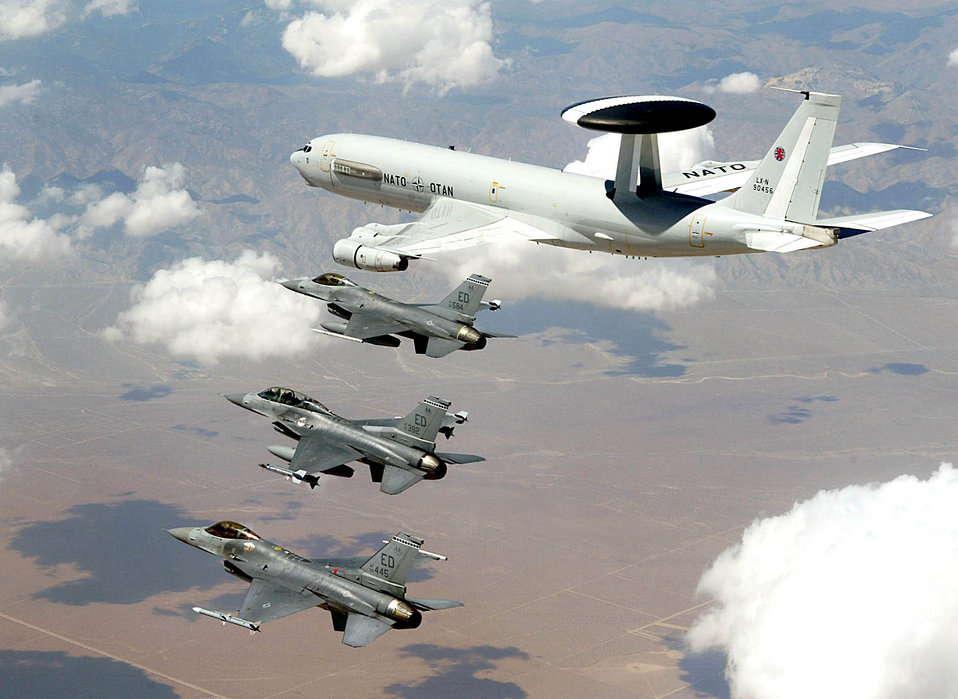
Falcons off my wing

EDWARDS AIR FORCE BASE, Calif. -- A NATO Airborne Warning and Control System aircraft flies with three F-16 Fighting Falcons during a recent test mission . The AWACS was here to conduct airborne interoperability testing on the Link-16, part of the F-16 Mid-Life Upgrade test program.